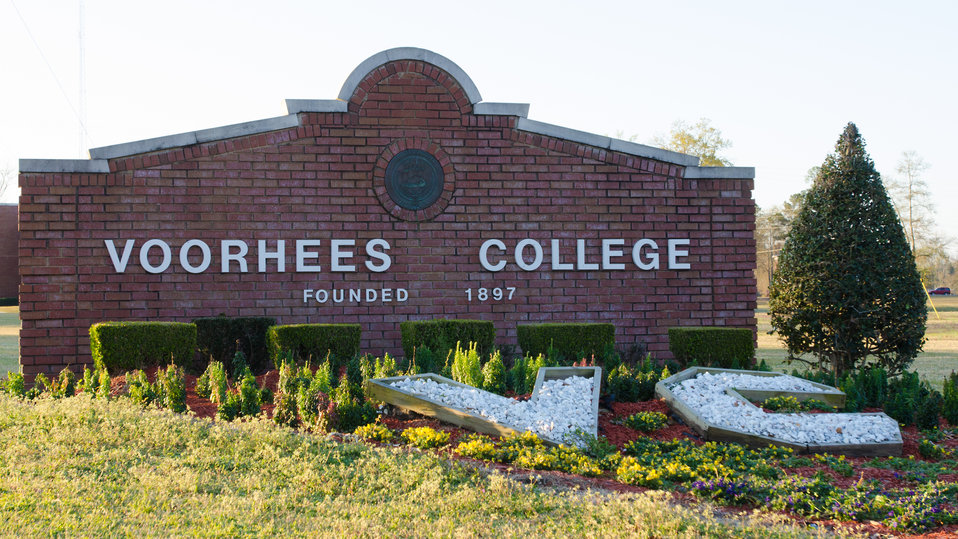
U.S. Department of Agriculture's (USDA) Strike Force for Rural Growth and Opportunity event was held at Voorhees College in Denmark, SC, on Tuesday, Mar. 26, 2013. The primary goal of the StrikeForce initiative is to increase partnership with rural communities and leverage community resources in targeted, persistent poverty areas. Vilsack noted that through the StrikeForce initiative, USDA will do more to partner with local and state governments and community organizations on projects that promote economic development and job creation.